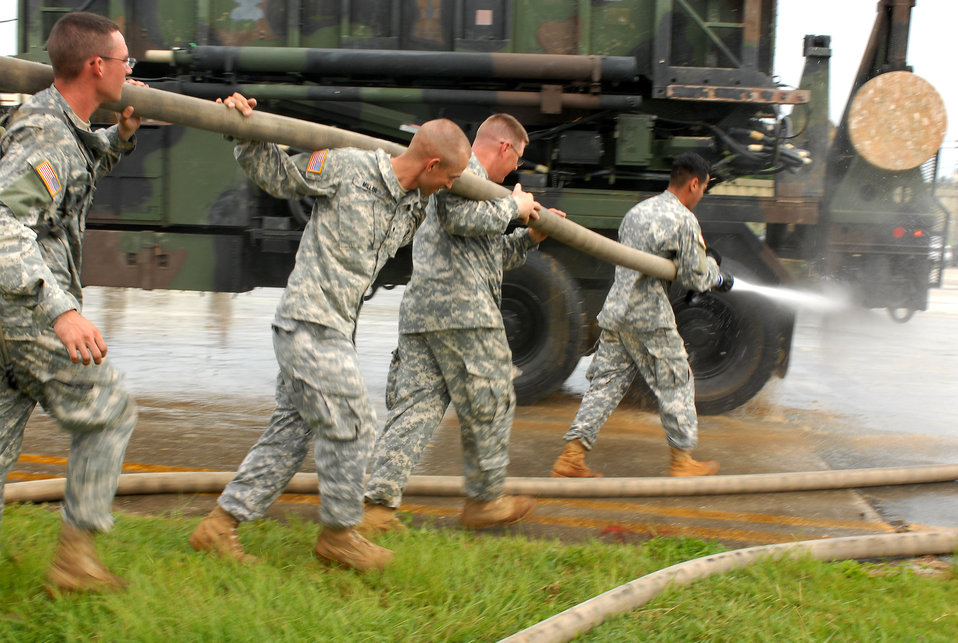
Typhoon Nari heads for Okinawa

Soldiers from the 1-1 Air Defense Artillery Battalion hose down all their heavy equipment before they park them into a hangar to weather Typhoon Nari Sept. 14 at Kadena Air Base, Japan. The typhoon is scheduled to hit the island the evening of Sept. 14 with 45 knot winds gusting to 65 knots.